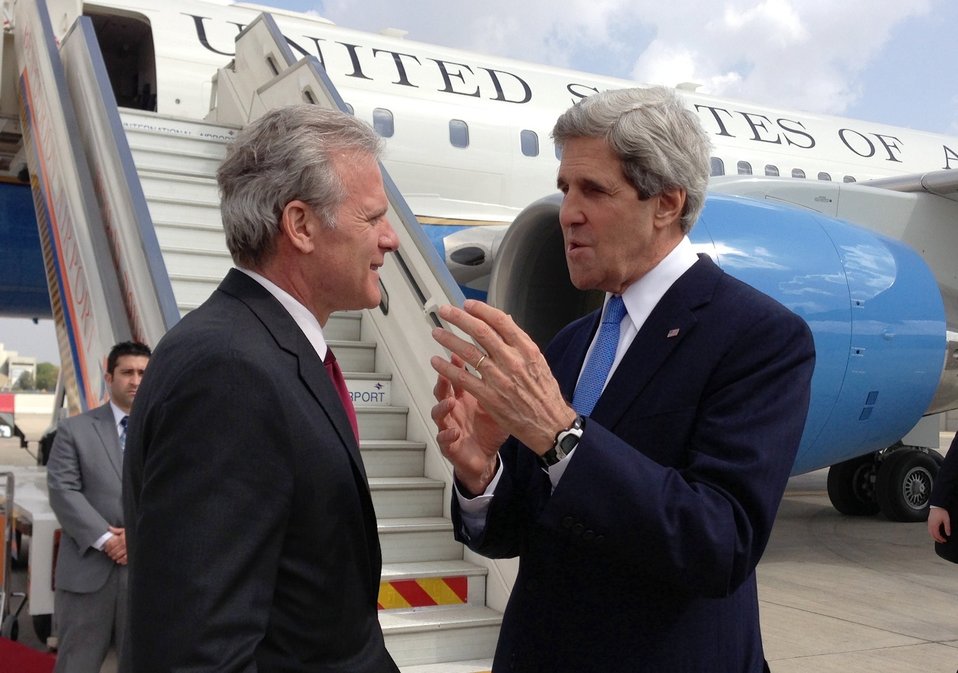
Secretary Kerry Bids Farewell to Israeli Ambassador Oren

U.S. Secretary of State John Kerry bids farewell to Israeli Ambassador to the United States Michael Oren at Ben Gurion International Airport in Tel Aviv, Israel, on April 9, 2013.